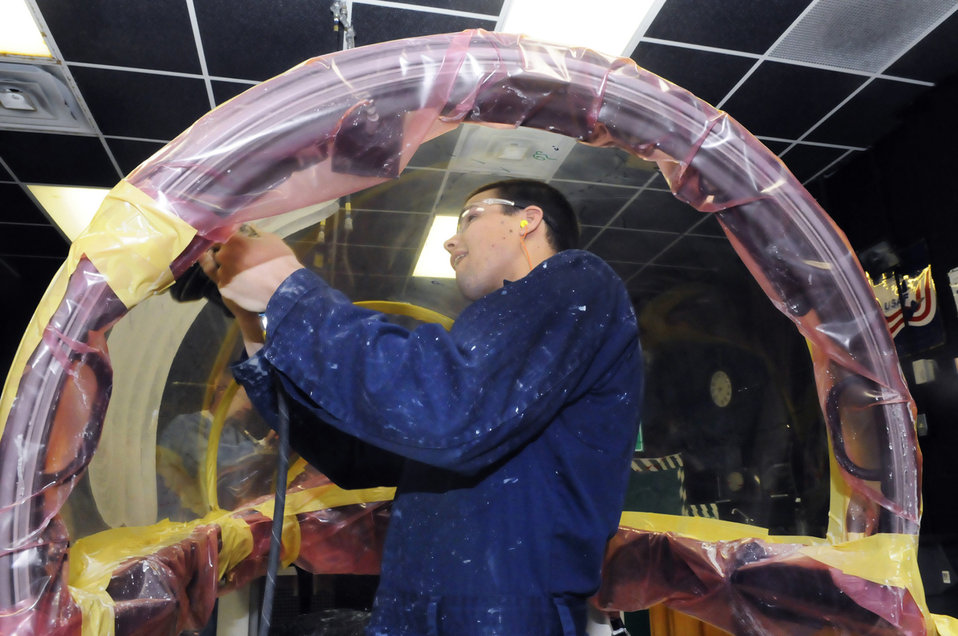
Robins maintainers give pilots unobstructed vision

Staff Sgt. Roy Nunn polishes the inside of an F-15 Eagle canopy at Robins Air Force Base, Ga. Sergeant Nunn is an Oregon Air National Guard member.